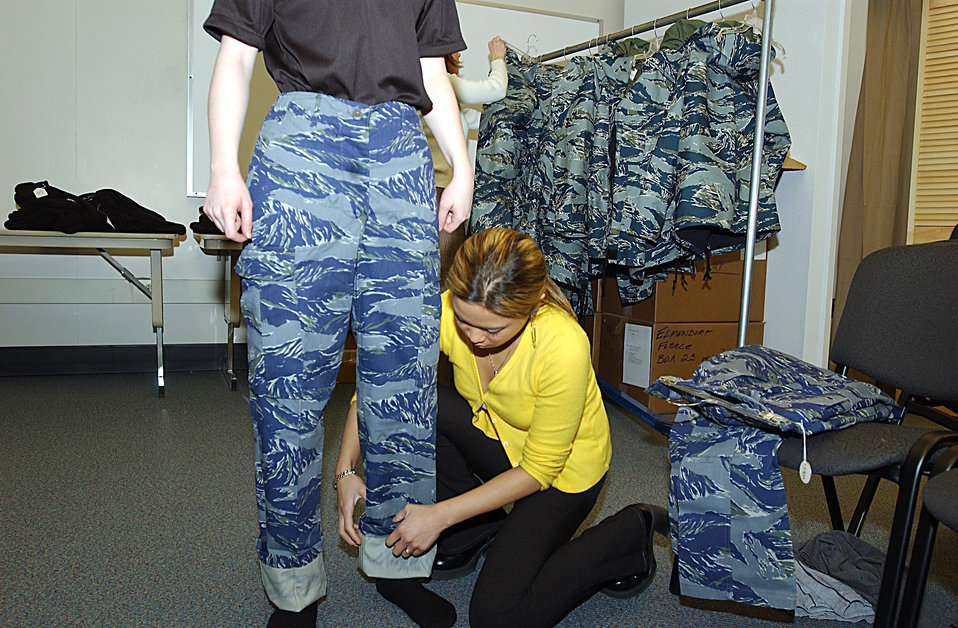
Fitting in

ELMENDORF AIR FORCE BASE, Alaska -- April Schuffe adjusts the length on proposed uniform pants here. The Air Force Clothing Office and the Air Force Uniform Board teams collected data and measurements to select wear-test participants. Ms. Schuffe works with the Army and Air Force Exchange Service.